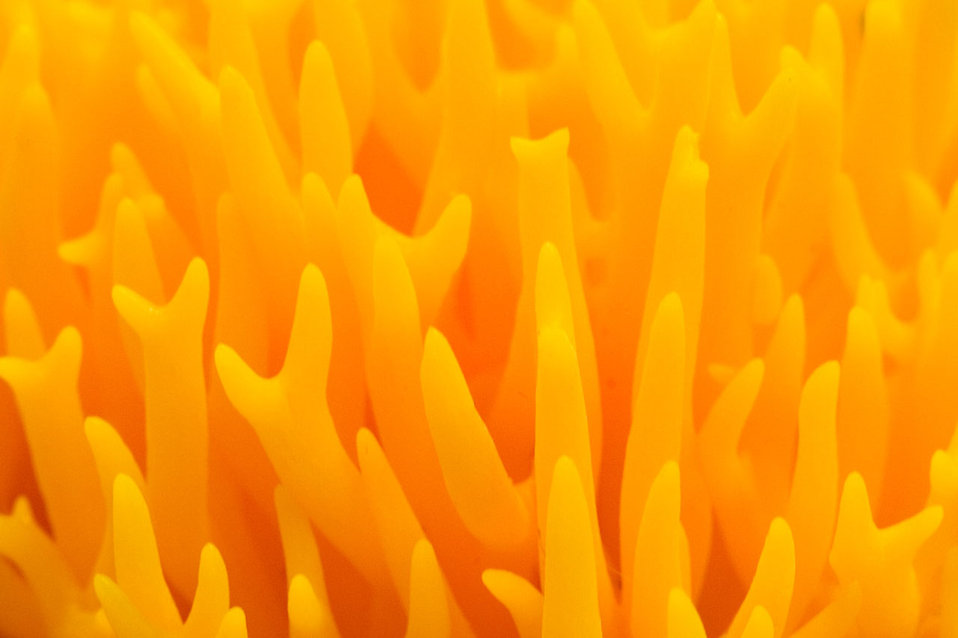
Macro of mushroom

A macro photo of the yellow wild mushroom.